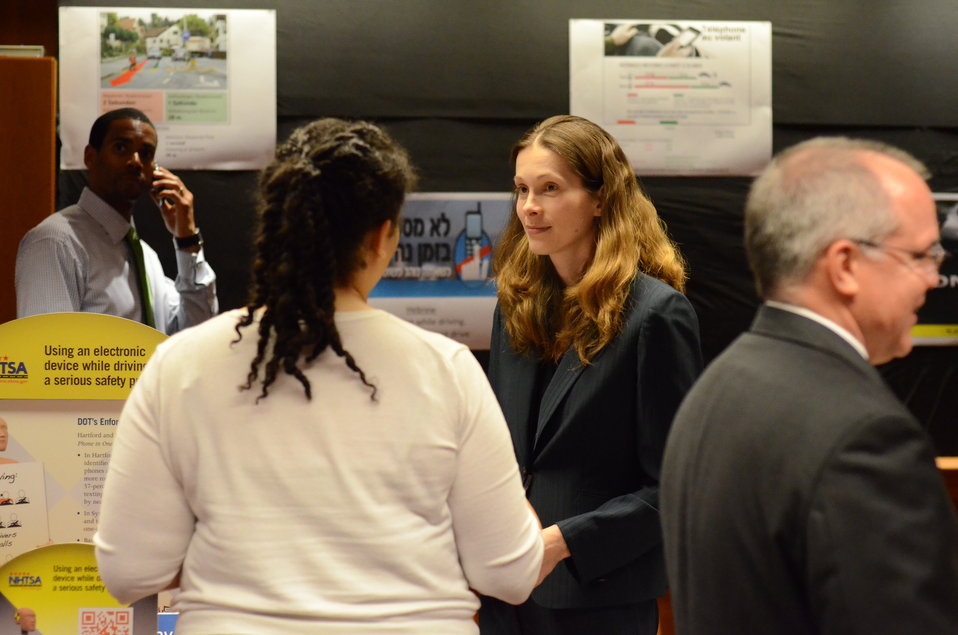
Distracted Driving Technology Showcase April 19, 2013